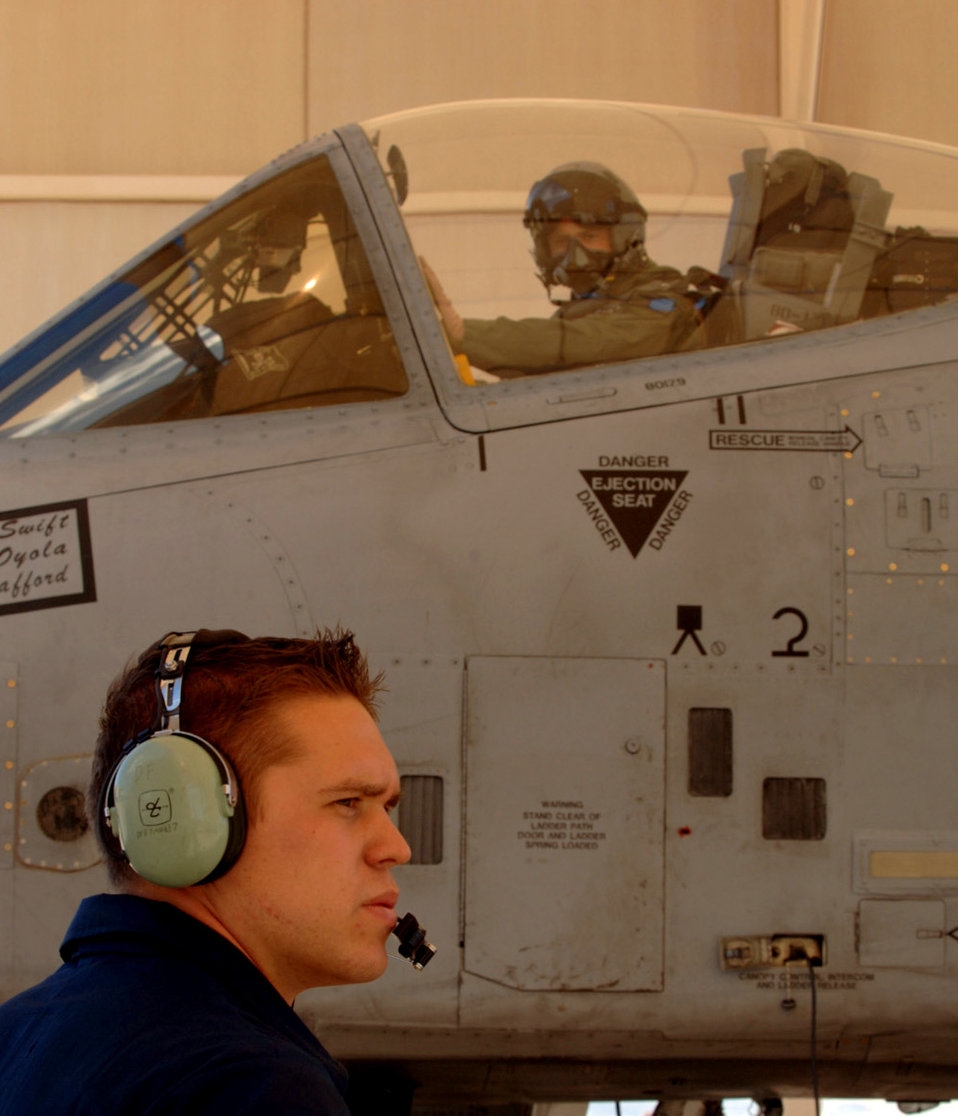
Exercise Bushwacker 06-02

Enclosed in the cockpit of an A-10 Thunderbolt II, Capt. Steve Raspert relies on his crew chief, Airman 1st Class Steve Hachey, on Saturday, April 1, 2006, at Davis-Monthan Air Force Base, Ariz. Captain Raspert is with the 354th Fighter Squadron; Airman Hachey is with the 355th Aircraft Maintenance Squadron.